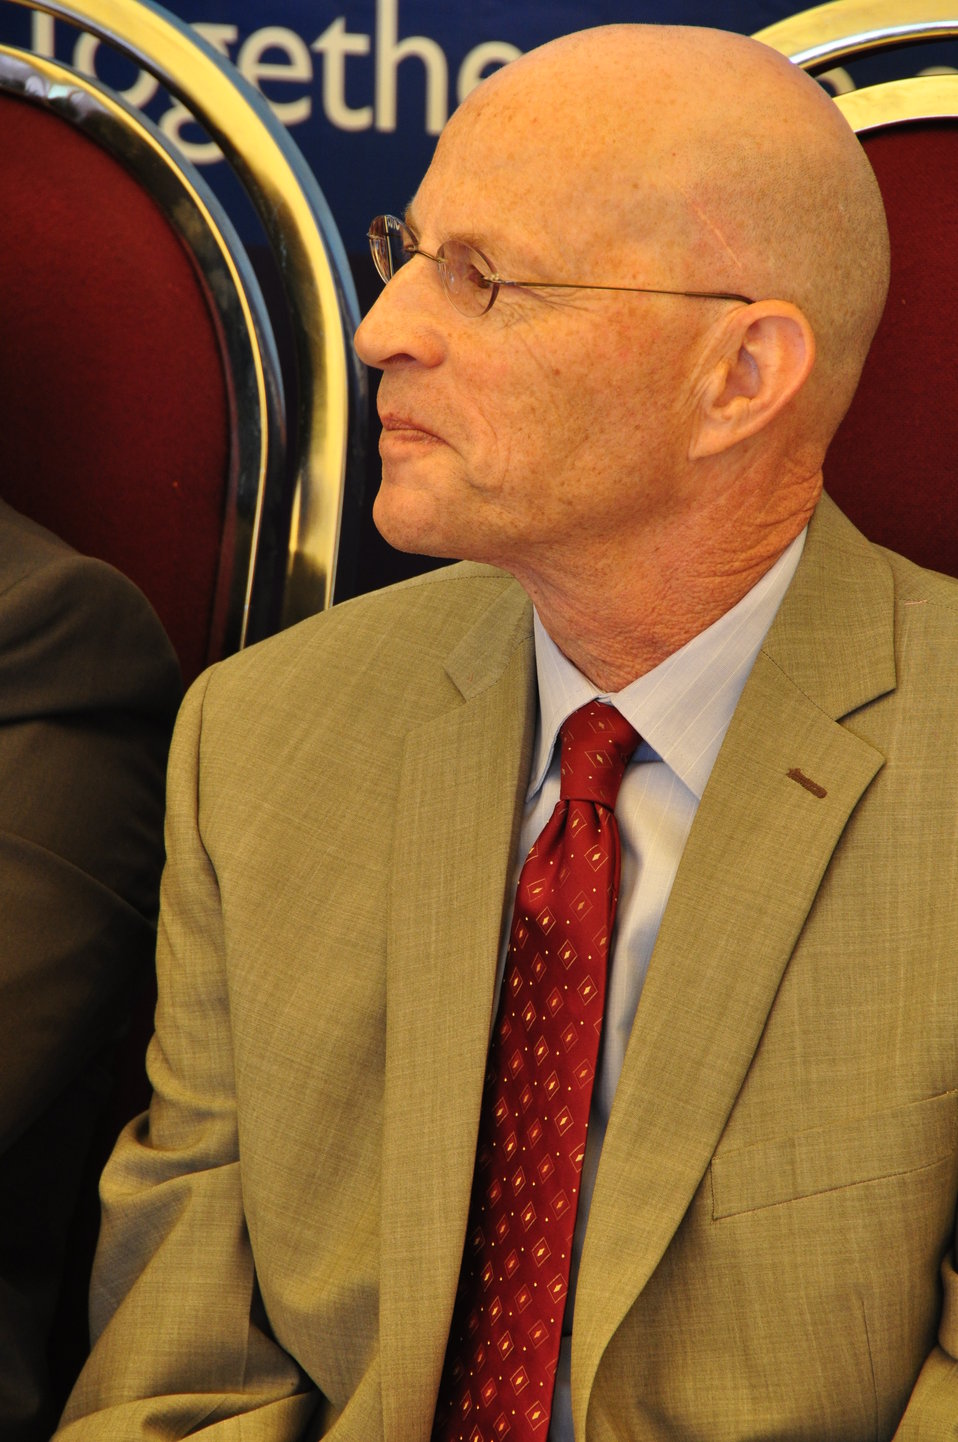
Dhirkot Reconstructed Hospital Inauguration Pakistan Reconstruction Program 10